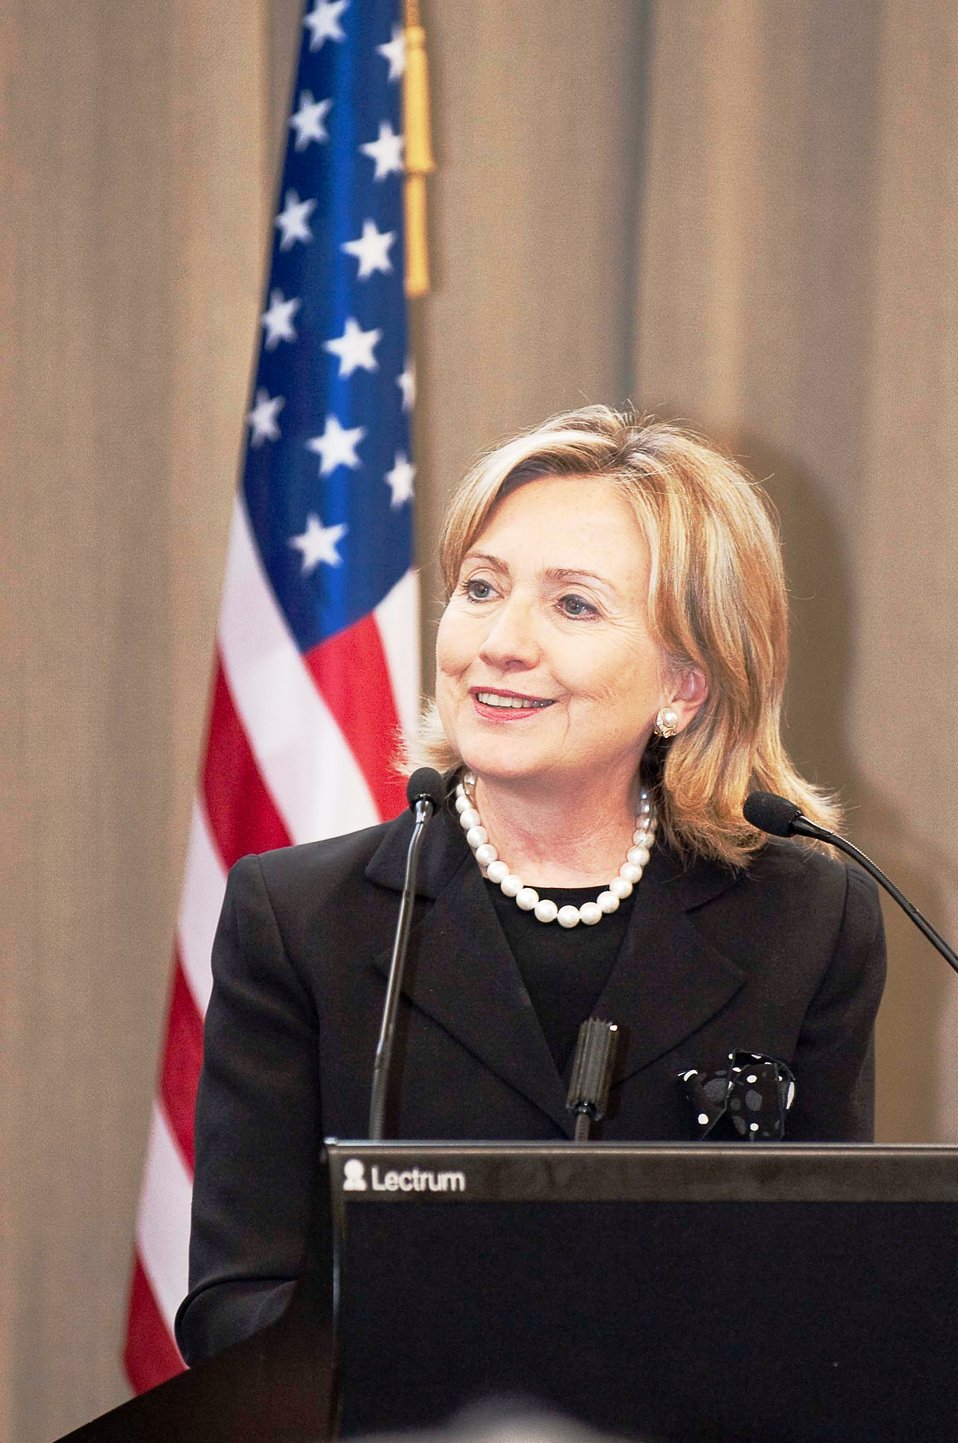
Secretary Clinton Attends a Reception Hosted by New Zealand Foreign Minister McCully

U.S. Secretary of State Hillary Rodham Clinton attends a reception hosted by New Zealand Foreign Minister Murray MCully in Wellington, New Zealand, on November 4, 2010.